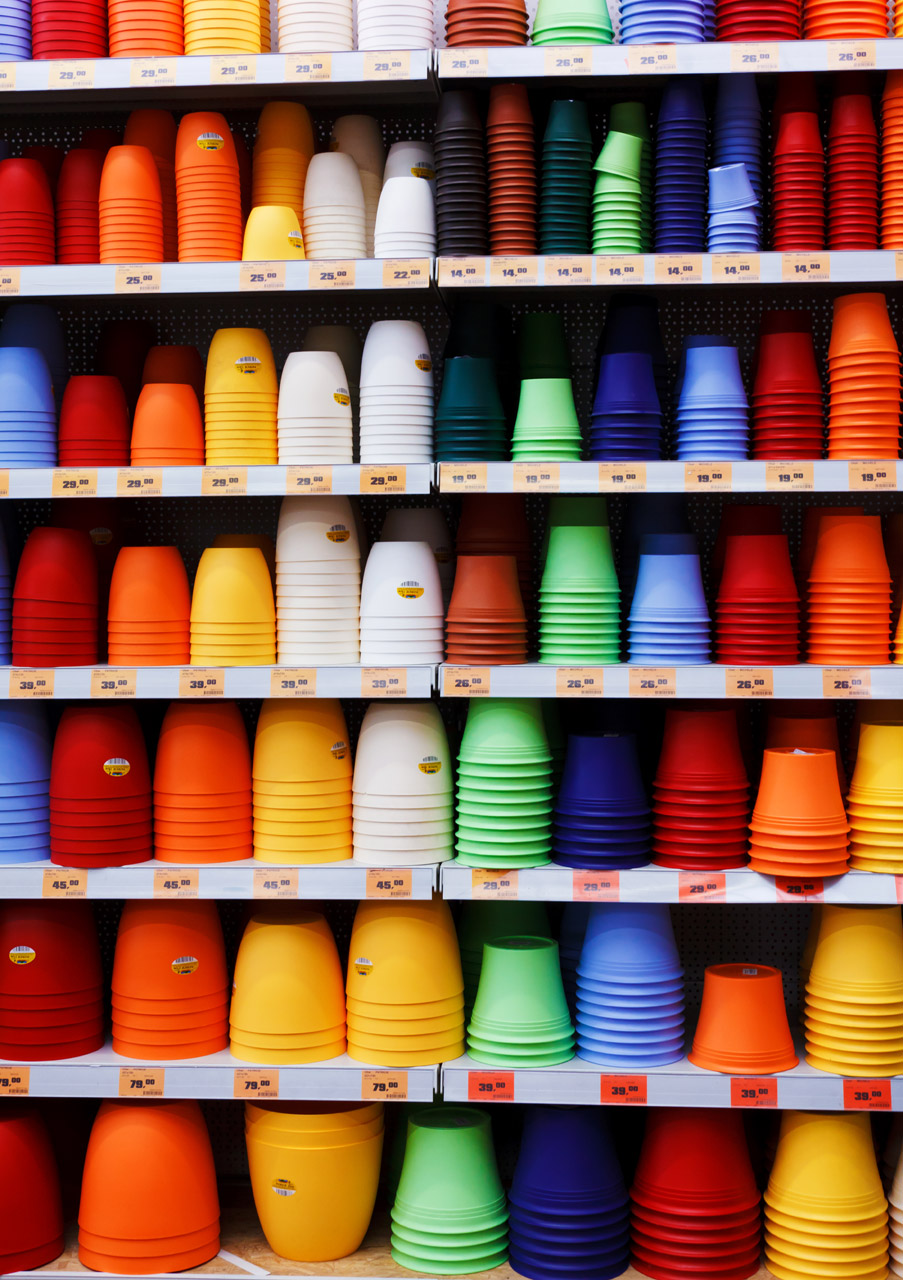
Colorful flower pots in garden center.